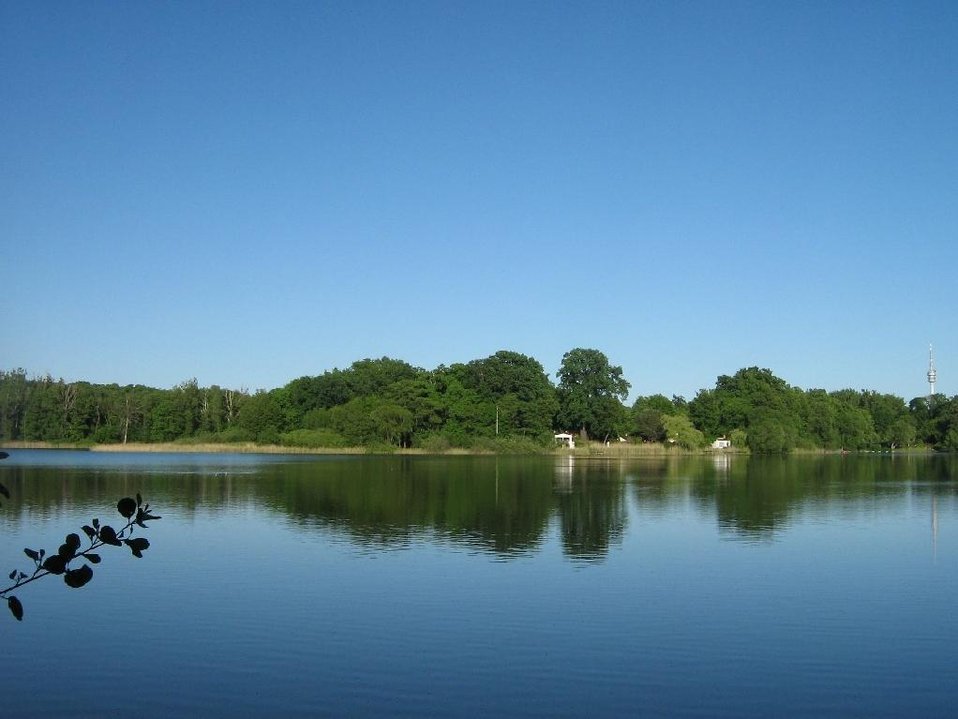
Deutsch: der Sacrower See im Königswald bei Potsdam (Brandenburg).